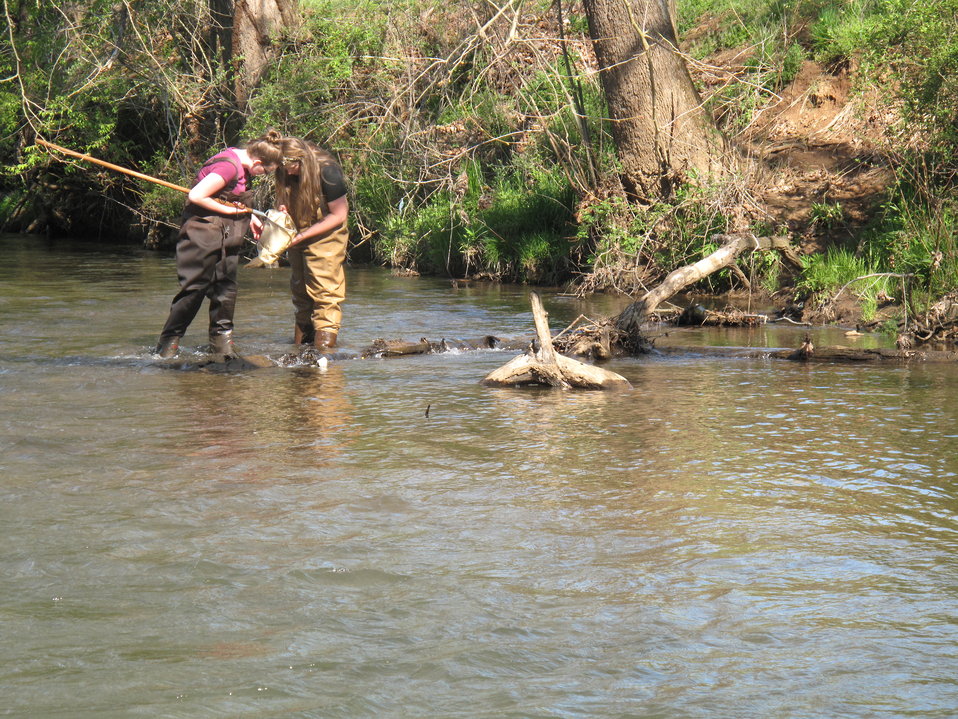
Pair of students check their D-net

Over the course of four days in late April 2014, every eighth grade student at North Carolina’s Macon Middle School, Highlands School, Nantahala School, and Trimont Christian Academy visited Cartoogechaye Park, in Macon County, to learn about rivers.

The students rotated through four stations:
1) water chemistry where they had the opportunity to help test water from Cartoogechaye Creek to gain an idea of the stream’s water quality;
2) aquatic insects, where students collected and identified animals like mayflies and caddisflies, learning how life in the river reflects the health of the river
3) fish, where they were able to collect and identify fish in the stream, and then
4) stream flow, where they measured and calculated the downstream movement of water, including the velocity of the water and the total volume of water being moved per second.

The event was organized by the University of Georgia's Coweeta Long-Term Ecological Research (LTER) Program, which is based at the USFS Coweeta Hydrologic Laboratory. (coweeta.uga.edu/), with sizable support from the Land Trust for the Little Tennessee. Other supporters include the U.S. Fish and Wildlife Service, N.C. Natural Heritage Program, and N.C. Division of Water Resources.